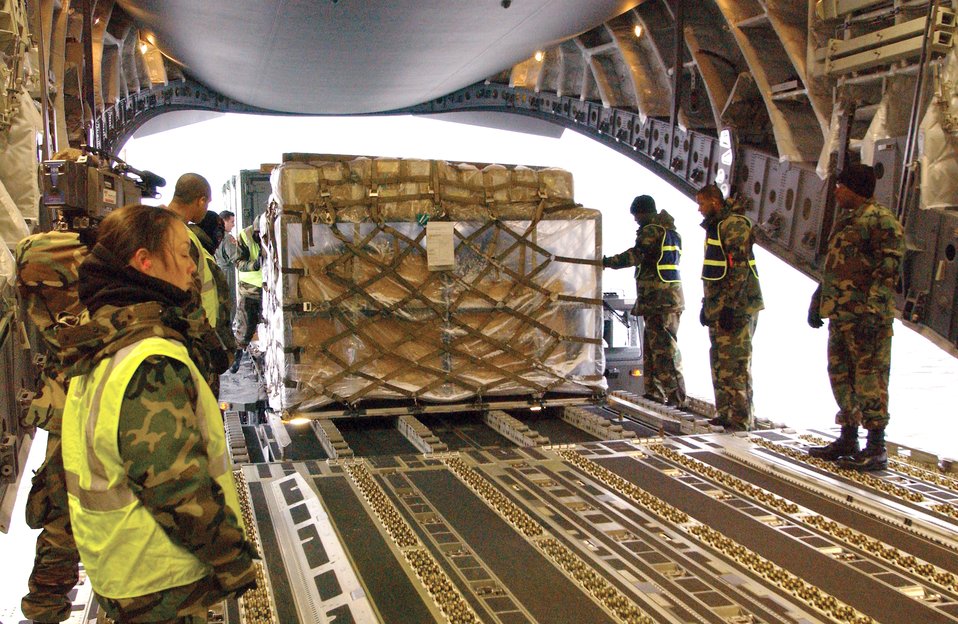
Yokota Airmen keep steady pace in providing relief

YOKOTA AIR BASE, Japan -- Airmen from the 374th Airlift Wing load supplies onto a C-17 Globemaster III here Dec. 31. The aircraft is headed for a forward-operating base in Utapao, Thailand. The supplies are intended to help other Airmen conduct missions supporting tsunami relief efforts in Thailand, Indonesia, Sri Lanka and India. About 170 Airmen from here have also deployed to support relief operations throughout the region.